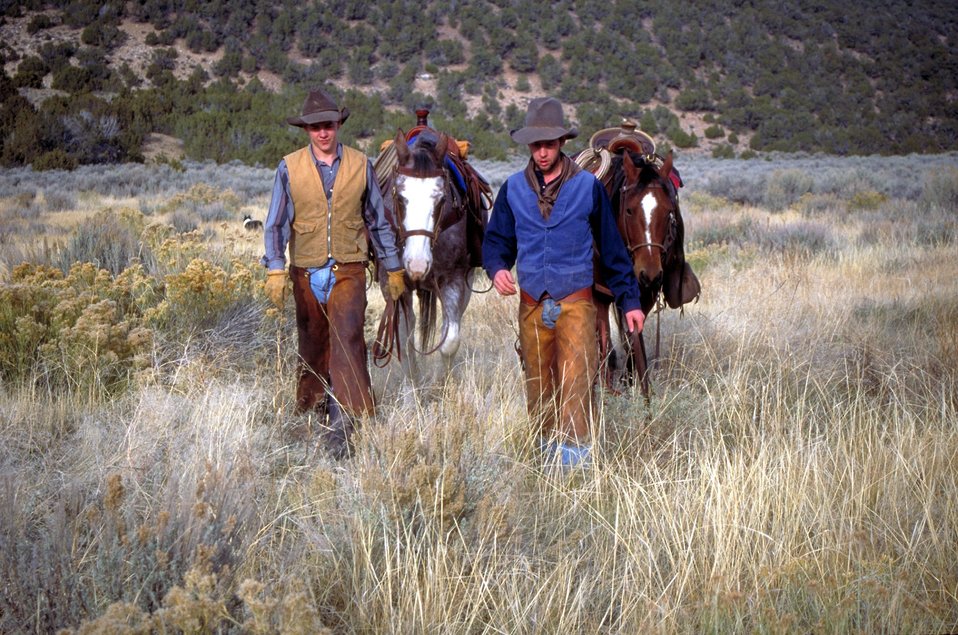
Working cowboys living near Vernal, Utah.